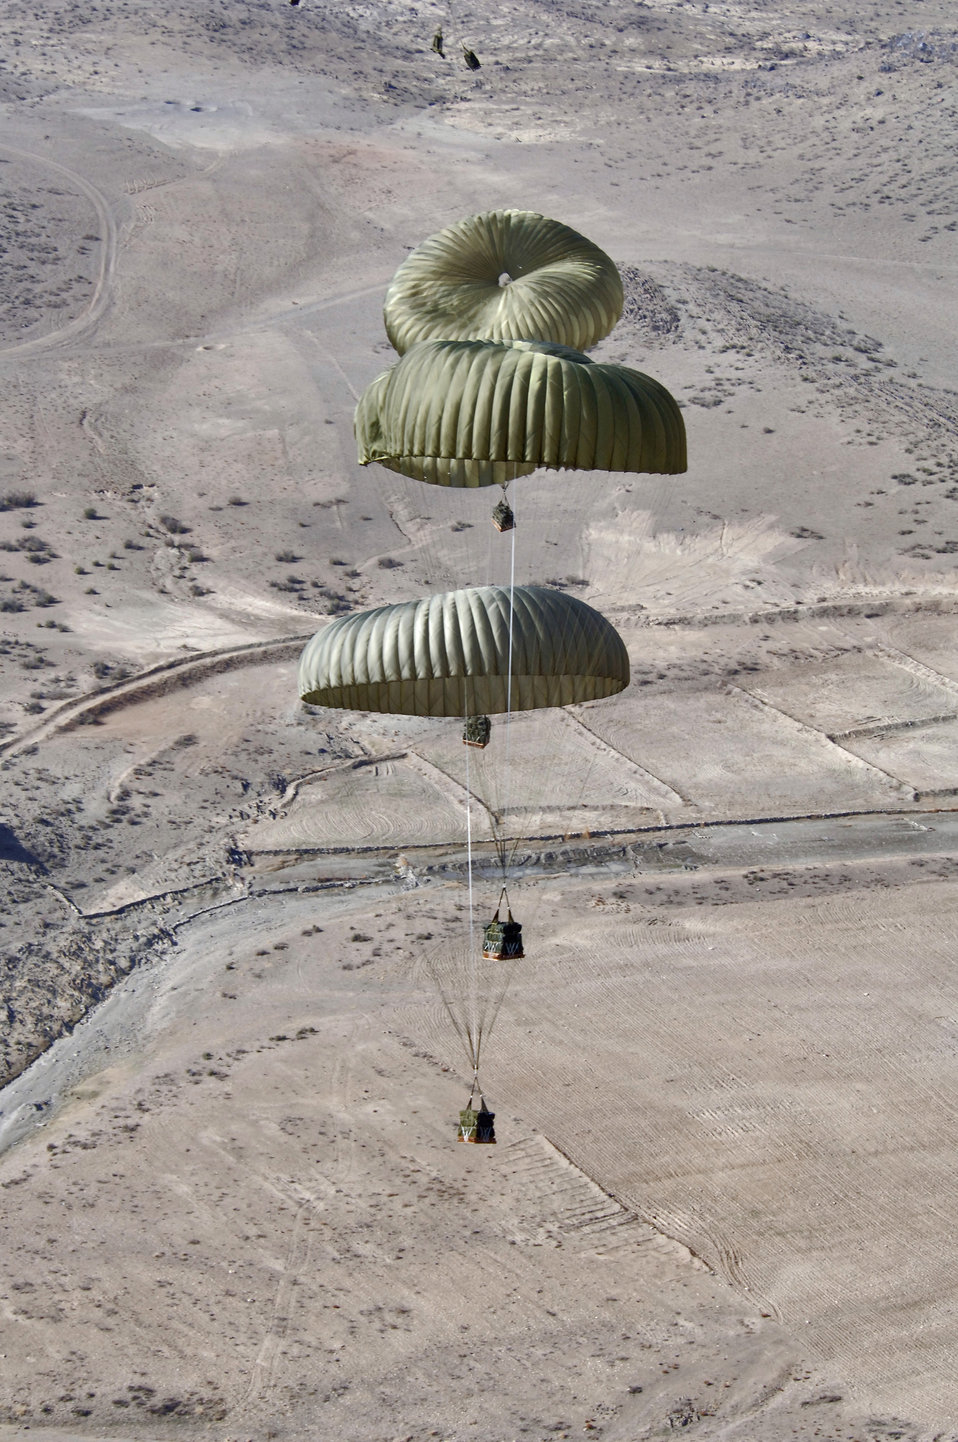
Special delivery

Pallets roll out of a C-130 Hercules near the Pakistan border Thursday, March 9, 2006. The airdrops re-supply forward operating locations surrounded by Afghan mountain ranges. The aircraft and most of its crew are from the Oklahoma Air National Guard's 185th Airlift Squadron at Will Rogers World Airport, and are deployed to the 774th Expeditionary Airlift Squadron at Bagram Air Base, Afghanistan.